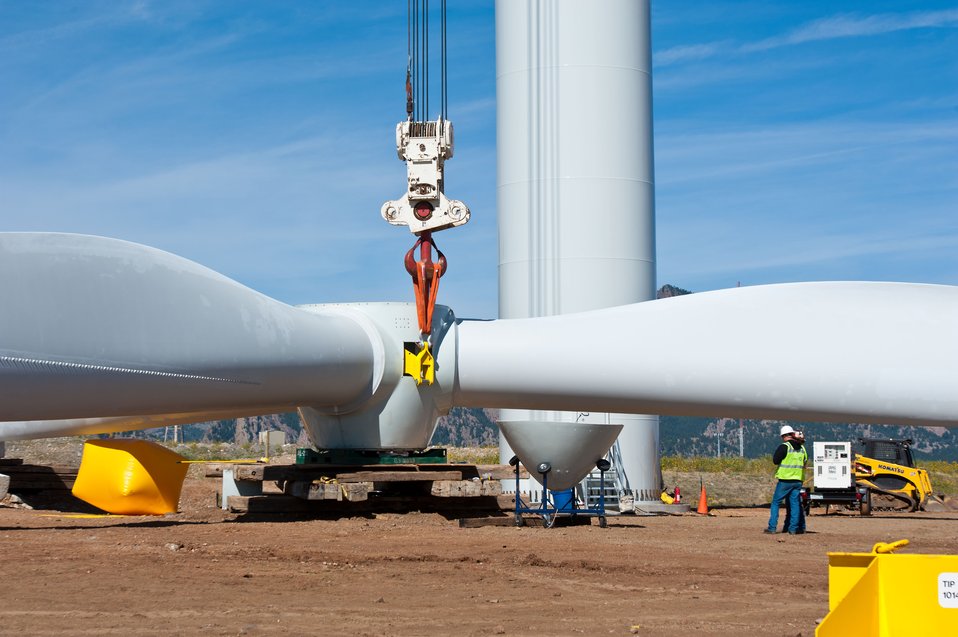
National Wind Technology Center - Colorado

Workers use a giant crane for lifting the blade assembly as work continues on the 2 MW Gamesa wind turbine being installed at NREL's National Wind Technology Center (NWTC).